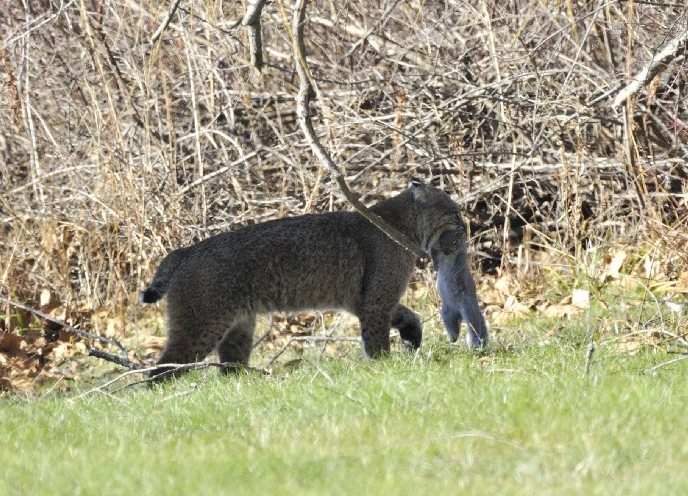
Photo of the Week - Bobcat (MA)

Photo of the Week - 12/17/2012

A bobcat with an Eastern gray squirrel in it's jaws photographed in Amherst, MA.